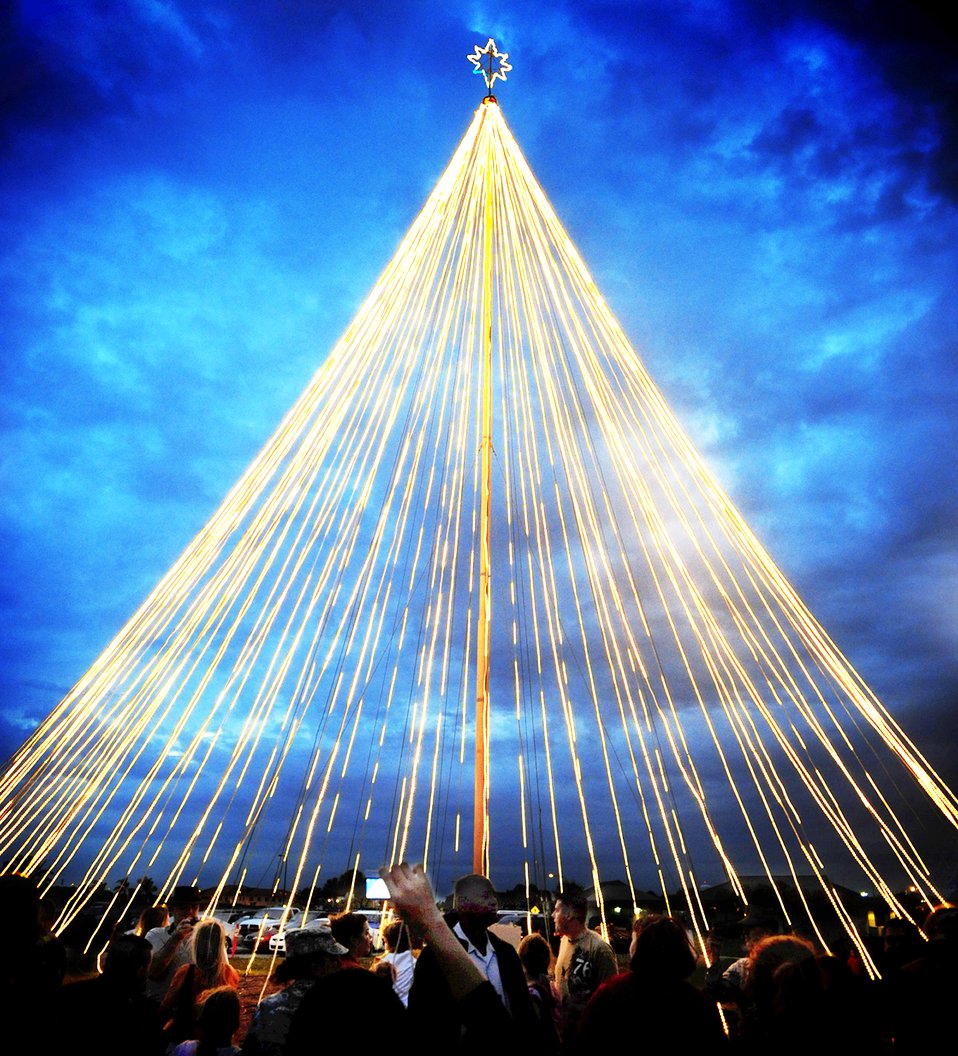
Shine brightly!

The base community watches as the Christmas tree lights up during the annual tree lighting ceremony at MacDill Air Force Base, Fla., Dec. 2, 2009. Families from the community gathered to hear Christmas carolers, watched the tree light up and had an opportunity to visit Santa.